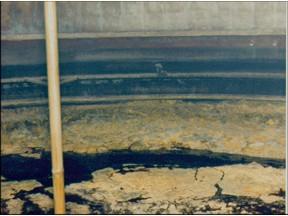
Hanford tank cleanup activities

Photo of EM cleanup activities within tank S-102 at Hanford, WA.